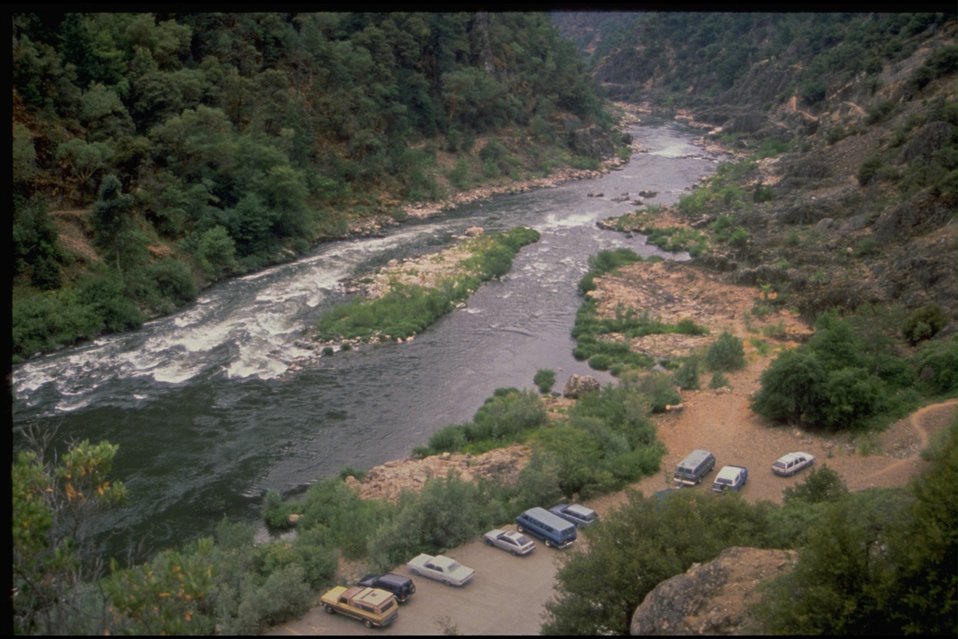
Grave Creek Boat Ramp.